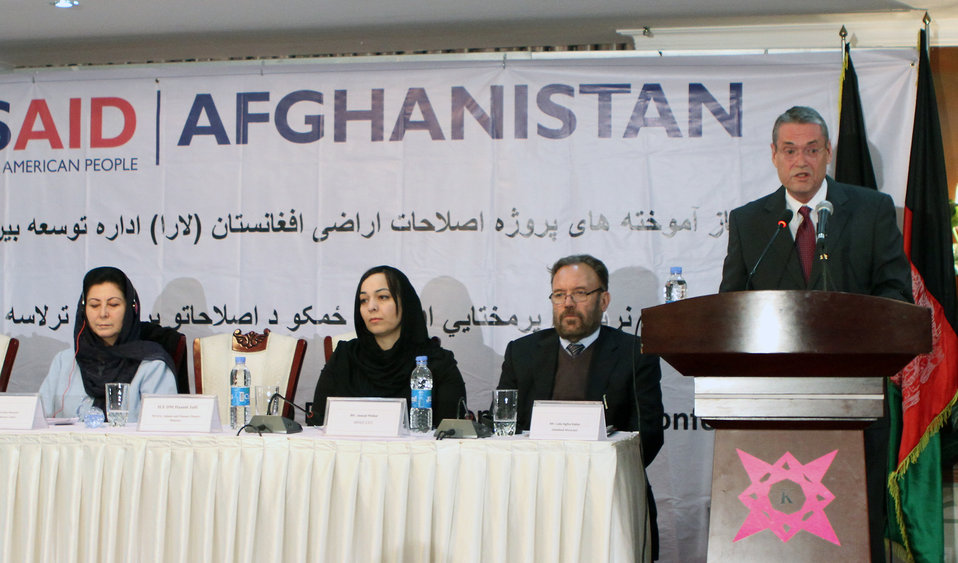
USAID Land Reform Project